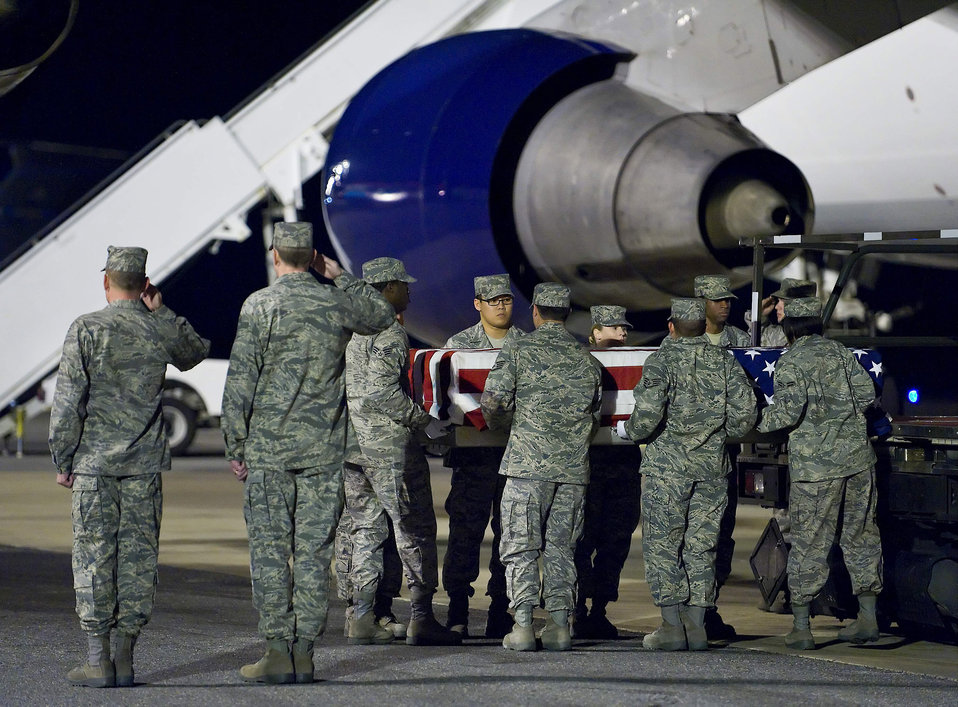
Dignified Transfer

An Air Force Mortuary Affairs Operations Center carry team transfers the remains of Air Force Staff Sgt. Phillip A. Myers, of Hopewell, Va., from the aircraft at Dover Air Force Base, Del., April 5. Sergeant Myers died April 4 near Helmand Province, Afghanistan, from wounds suffered from an improvised explosive device. He was assigned to the 48th Civil Engineer Squadron, Royal Air Force Lakenheath, United Kingdom. Sergeant Myers' family is the first to allow media to cover the dignified transfer under the new Department of Defense policy.